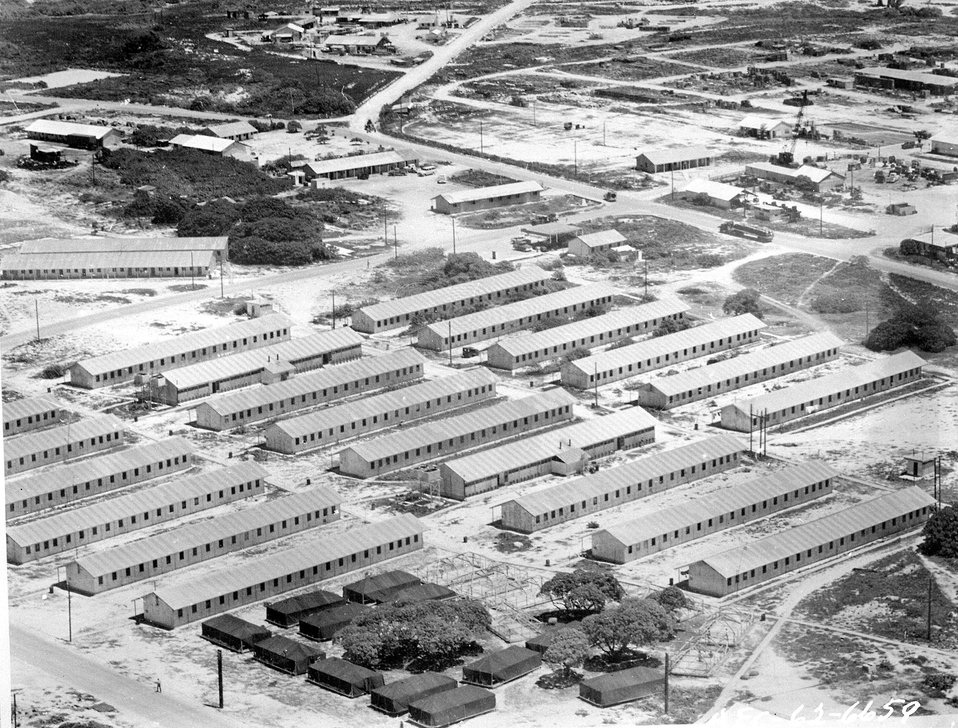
Significant Atomic Bombs and Tests, Pacific Tests, Christmas Islands, 1962